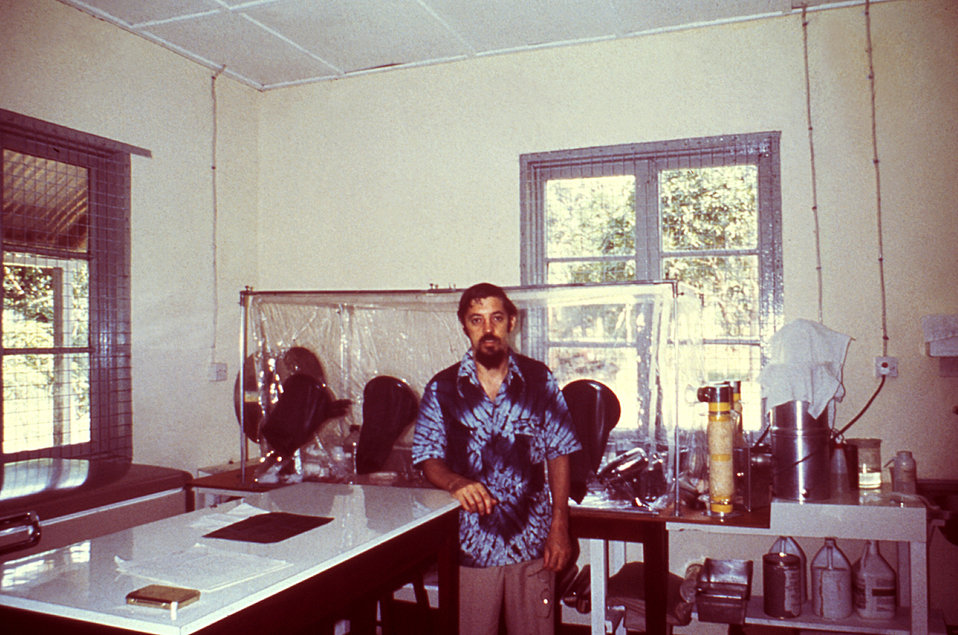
This was Dr. Joseph McCormick in his Sierra Leone lab. In 1977 he participated in the Lassa Fever Project as an EIS Officer.